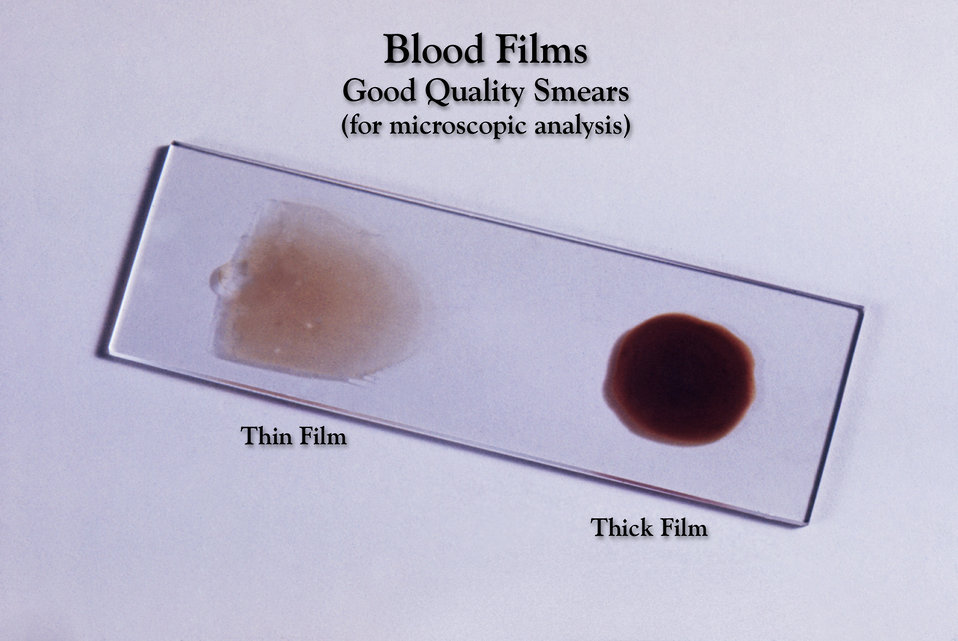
This prepared slide offers a good example of a thick and thin blood smear to be examined under the microscope.